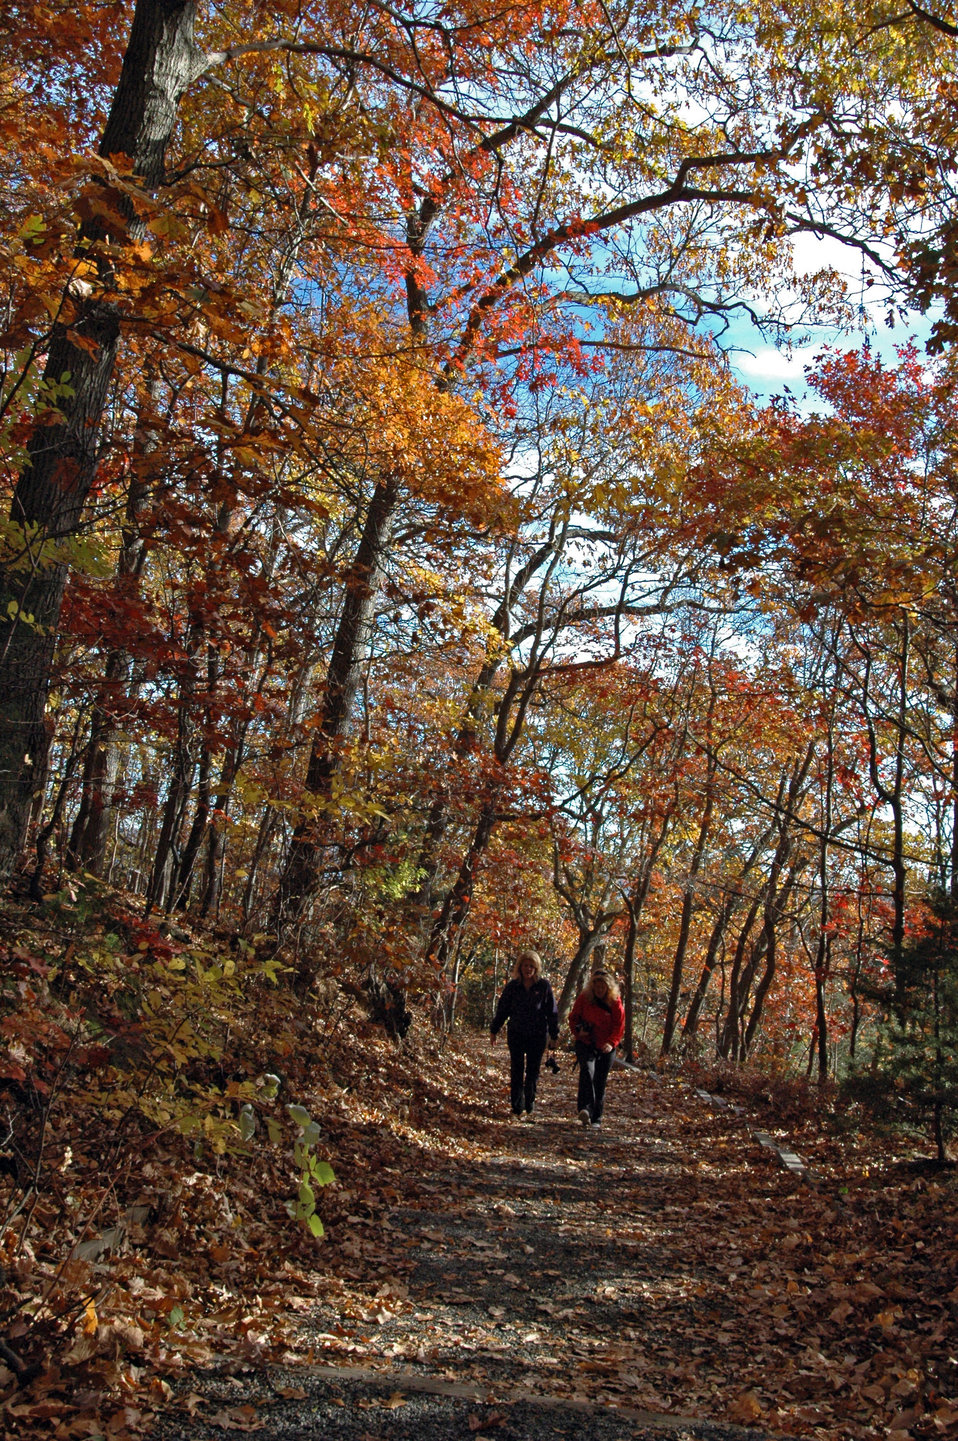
Hiking in fall

Target Rock National Wildlife Refuge, NY.